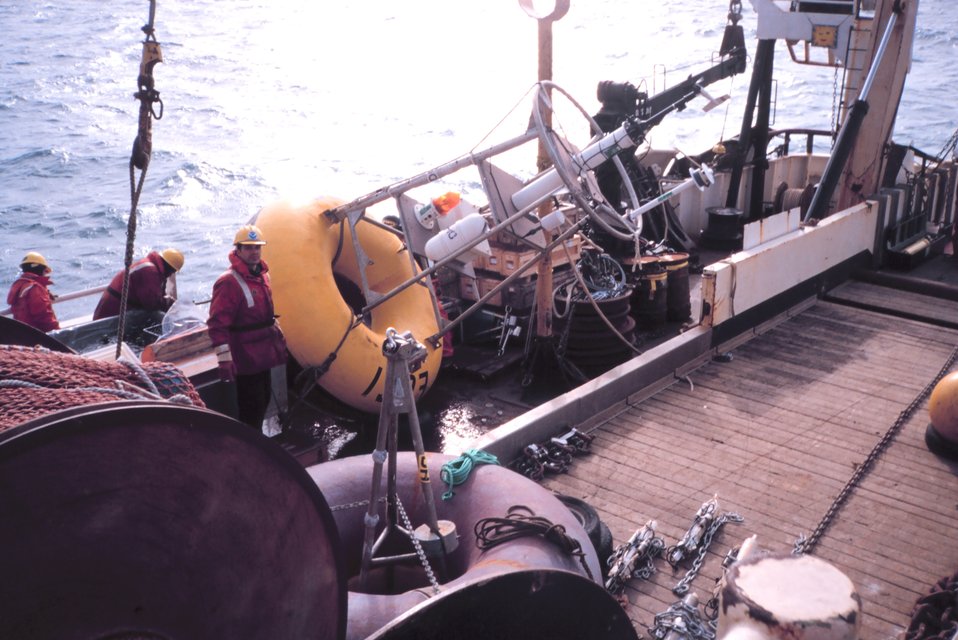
Meteorological buoy ready for deployment off of MILLER FREEMAN.